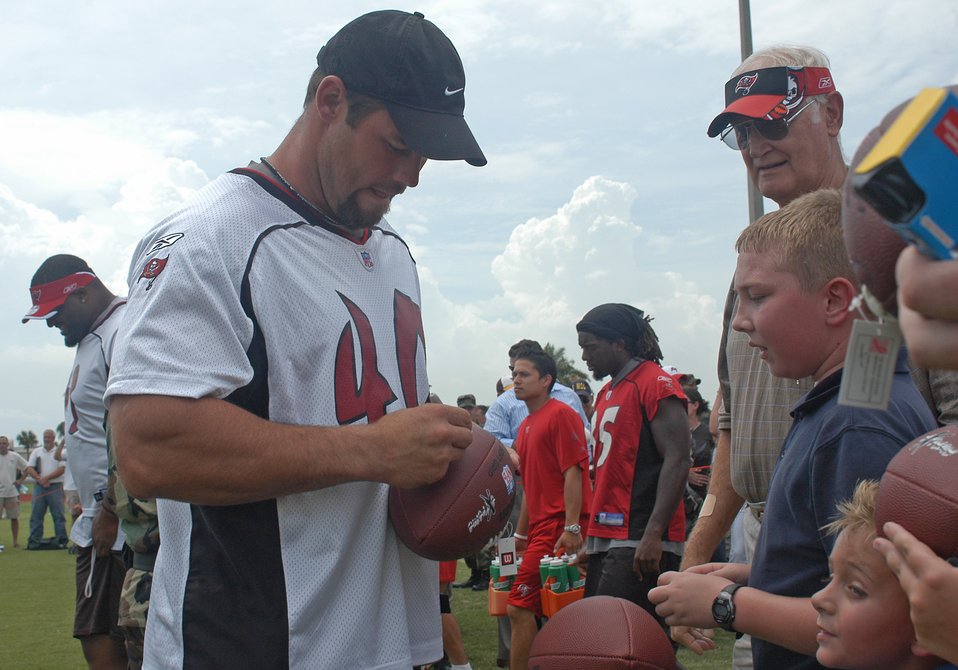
Tampa Bay plays at MacDill

Mike Alstott, Tampa Bay Buccaneers fullback, signs an autograph for a fan before the pre-game, walkthrough practice held at MacDill Air Force Base, Fla., on Aug. 18. The practice was closed to the general public but open to base personnel. Airmen who attended the practice were able to get an up-close look at the 2006 Buccaneers team.